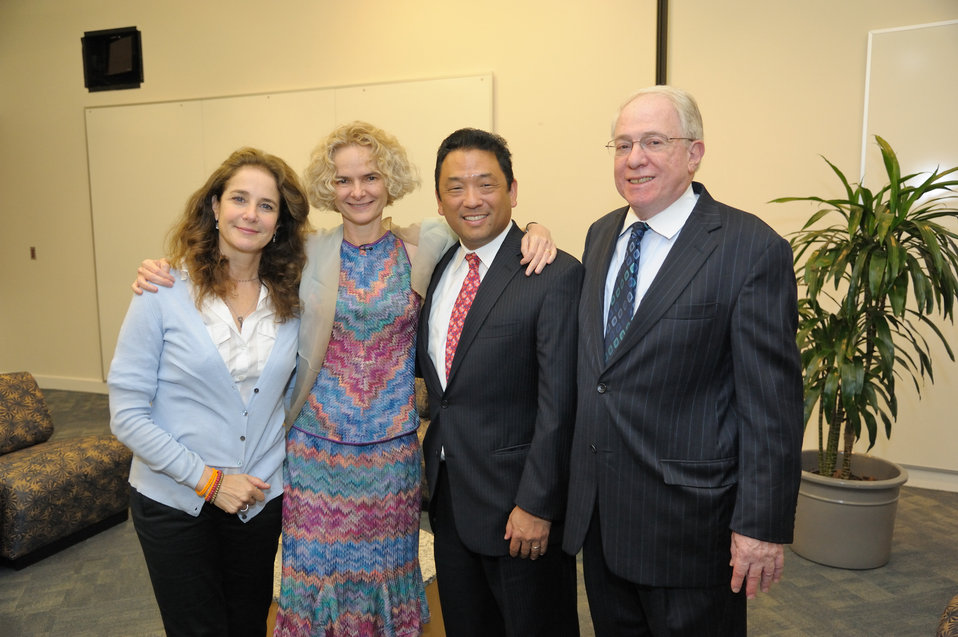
APP - NIH Aug 2011

(L-R): Debra Winger, Dr. Nora Volkow (NIDA Director), David Mineta (Deputy Director of Demand Reduction, White House Office of National Drug Control Policy), Dr. Kenneth Warren (Acting Director, NIAAA)